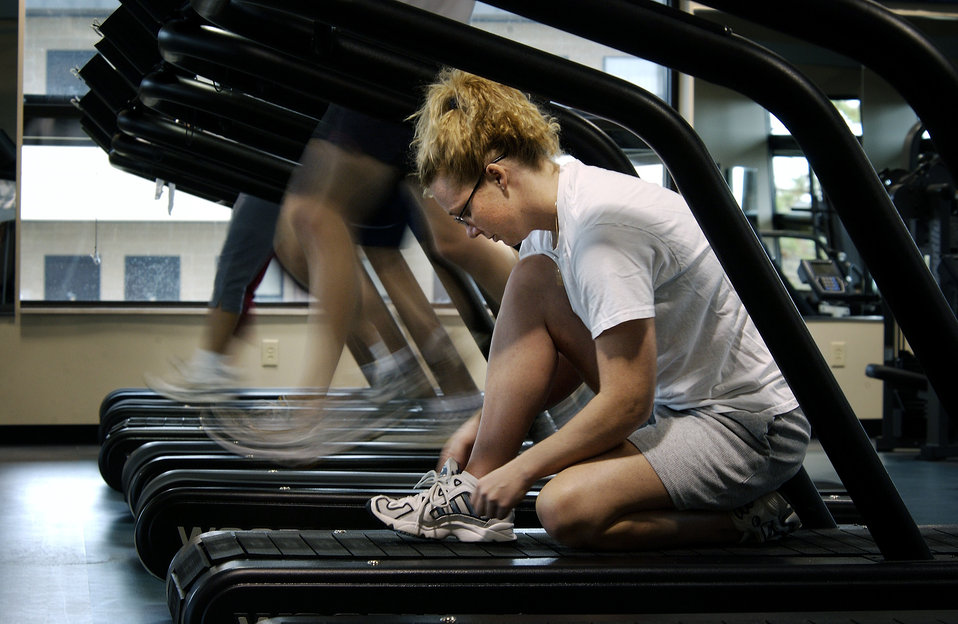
Hurlburt Airmen can dine 'n' dash

HURLBURT FIELD Fla. -- Denise Borough prepares to run on a treadmill at the Riptide fitness center here. The patrons can dine downstairs and work out upstairs. Mrs. Borough is married to Tech. Sgt. Donelly Borough of the 16th Special Operations Squadron.